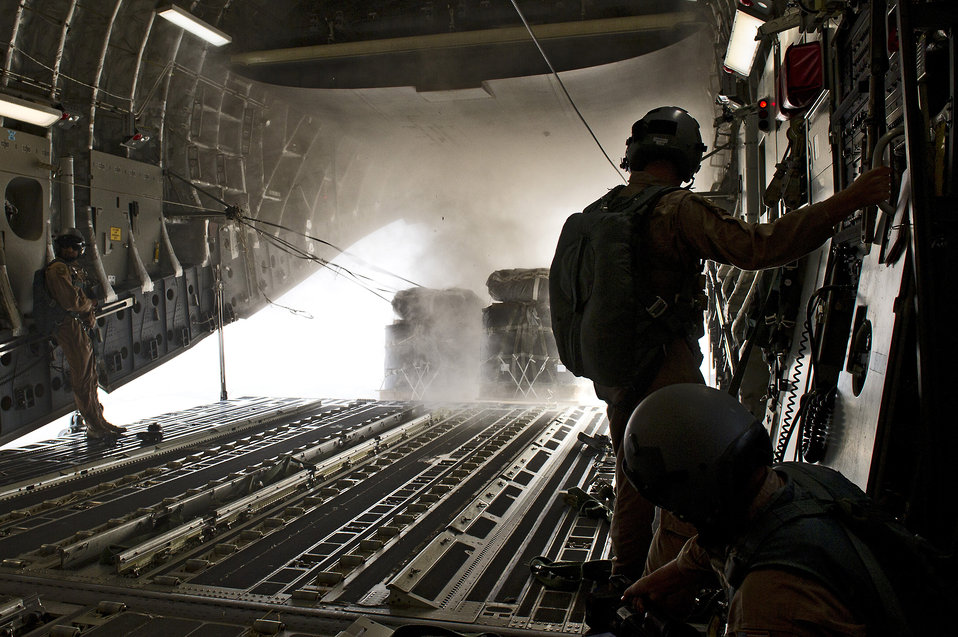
Supplying the fight

Staff Sgts. Russell Johnson (right) and Stephen Adams watch as fuel barrels are airdropped July 8, 2011, from a C-17 Globemaster III above Afghanistan. The two NCOs are loadmasters assigned to the 816th Expeditionary Airlift Squadron.